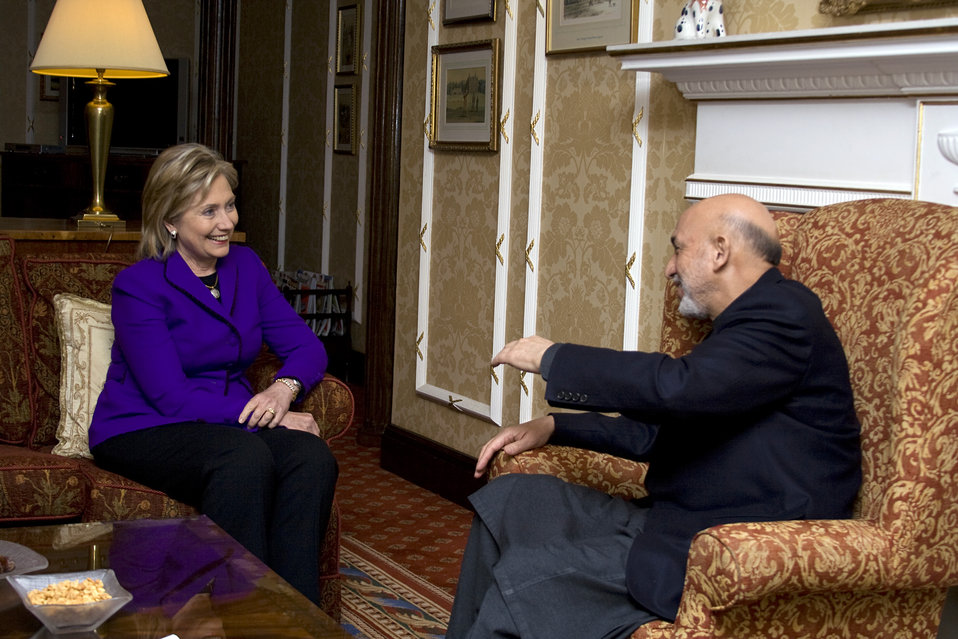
Secretary Clinton With President Karzai

U.S. Secretary of State Hillary Rodham Clinton meets with President of Afghanistan Hamid Karzai in London, January 28, 2010.